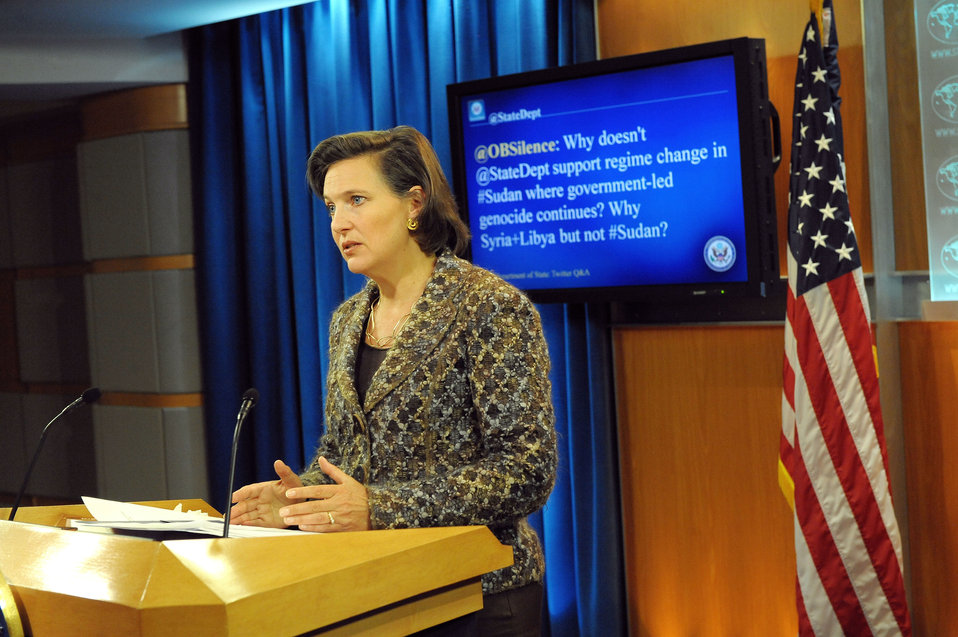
Spokesperson Nuland Responds to a Question from @StateDept

Victoria Nuland, Spokesperson for the U.S. Department of State, answers a question selected from the Department’s official English Twitter feed, @StateDept, on January 6, 2012.